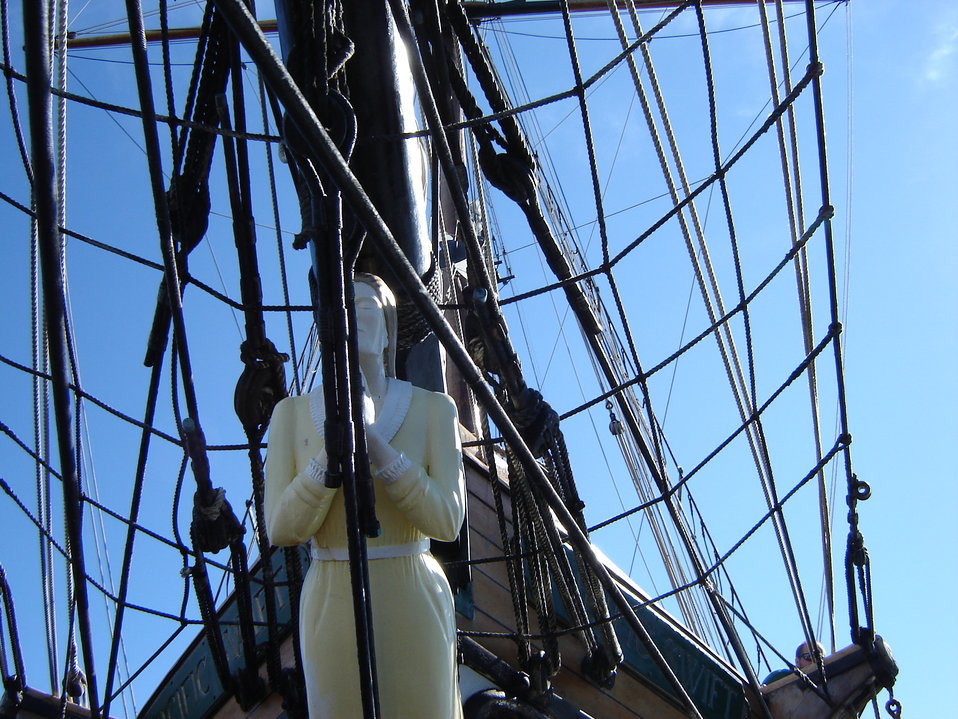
Photo taken by Graham Kinglsey